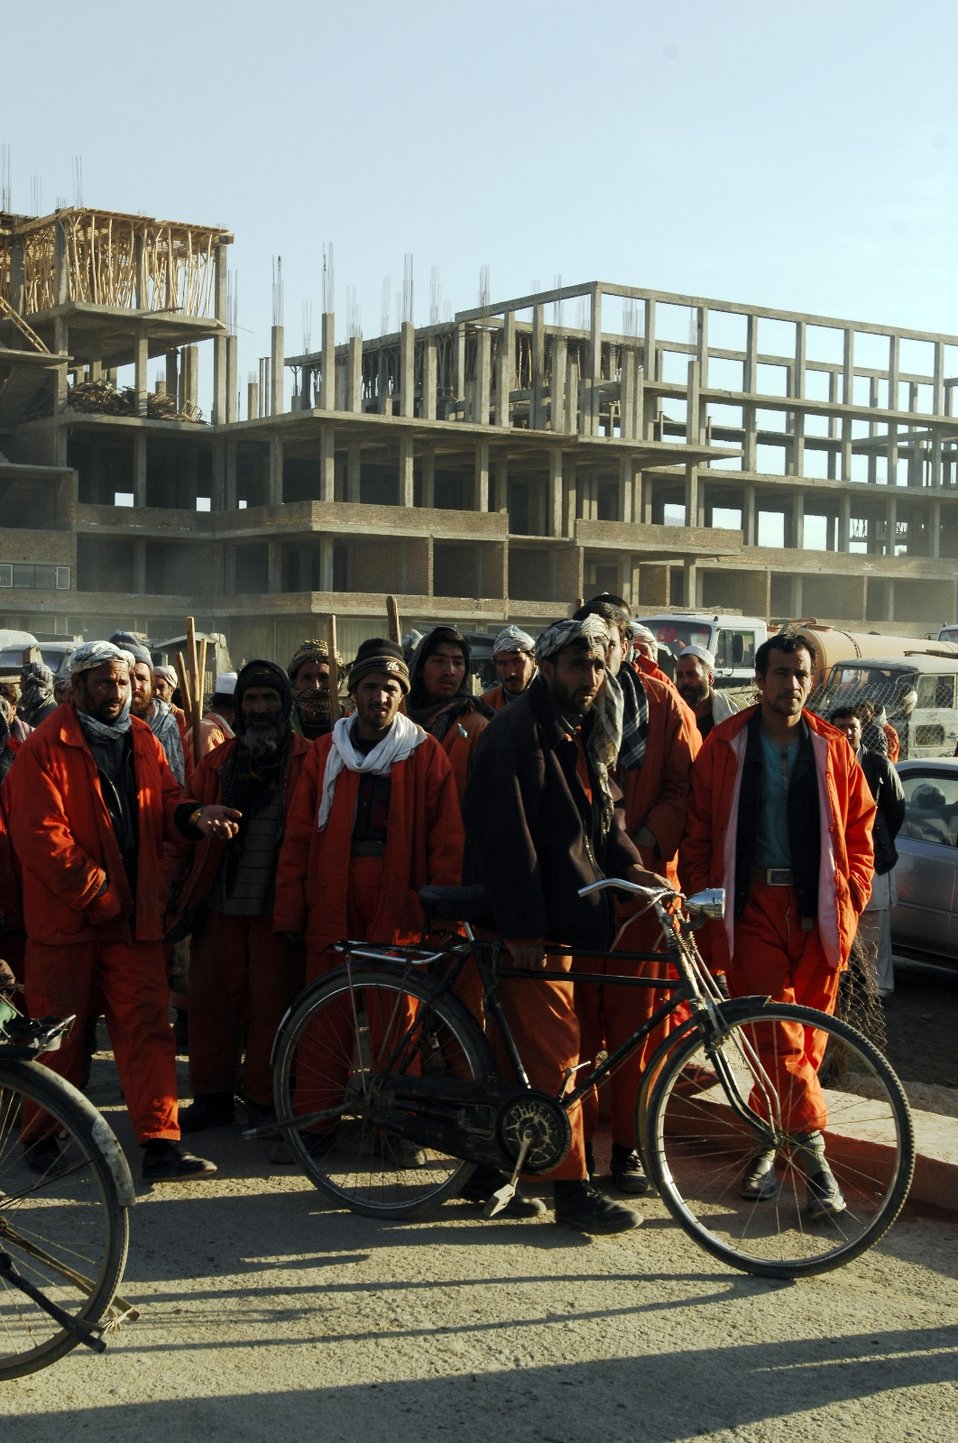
Care58